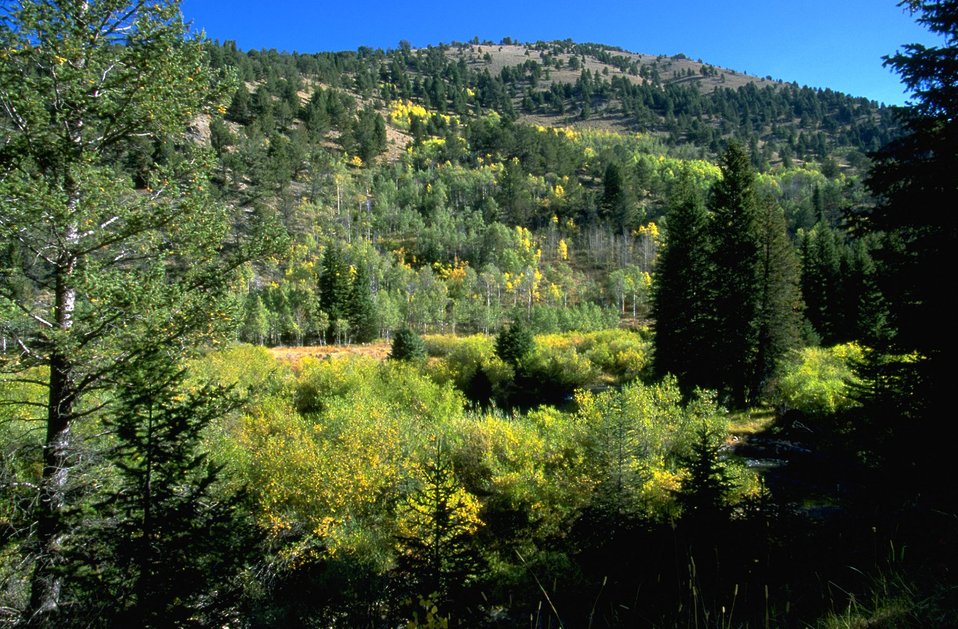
Willow and Aspen on forested slopes